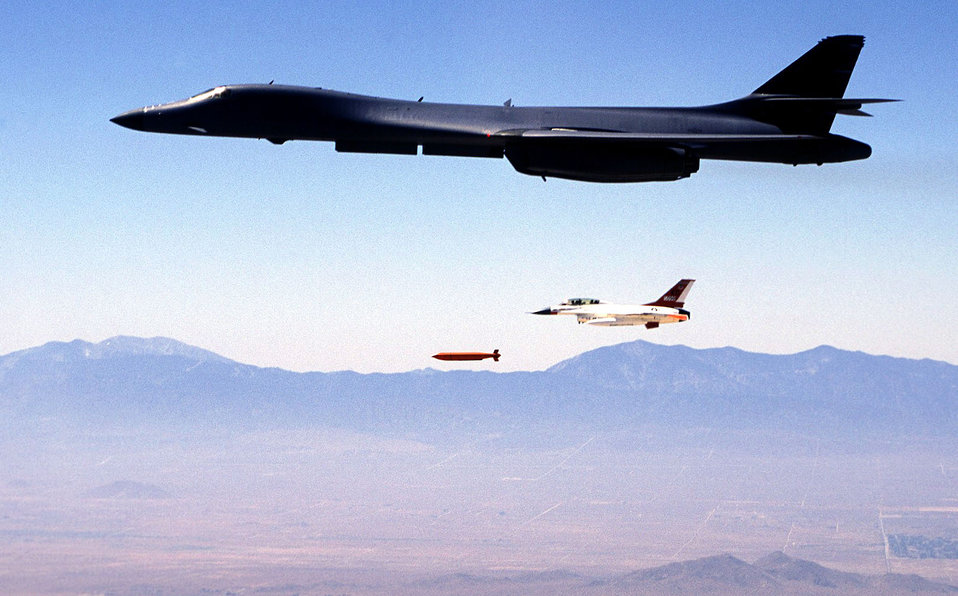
Bombs away

EDWARDS AIR FORCE BASE, Calif. -- A B-1B Lancer from the global power bomber combined test force here drops a Joint Standoff Weapon during a recent test mission. The test marked the first time the JSOW has been dropped from the long-range bomber.